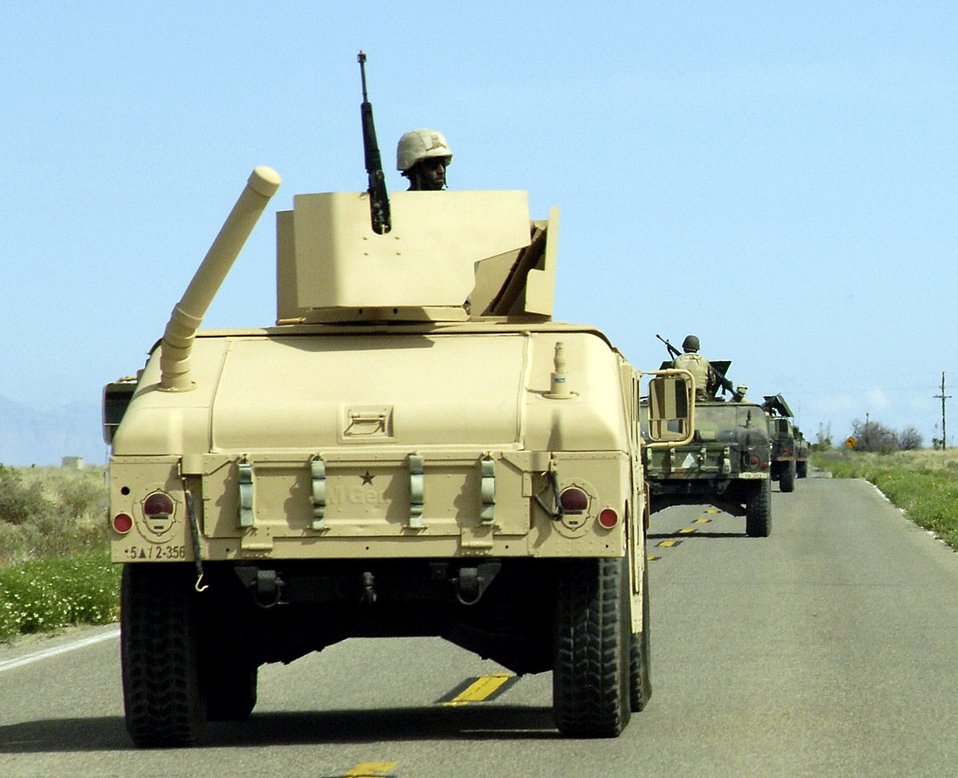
Airmen complete realistic deployment exercise

Airmen from the 49th Civil Engineer Squadron leave on a convoy as part of a deployment exercise at Holloman Air Force Base, N.M., May 7. The civil engineers trained with Soldiers from Fort Bliss, Texas, to incorporate the total force scenario experience.